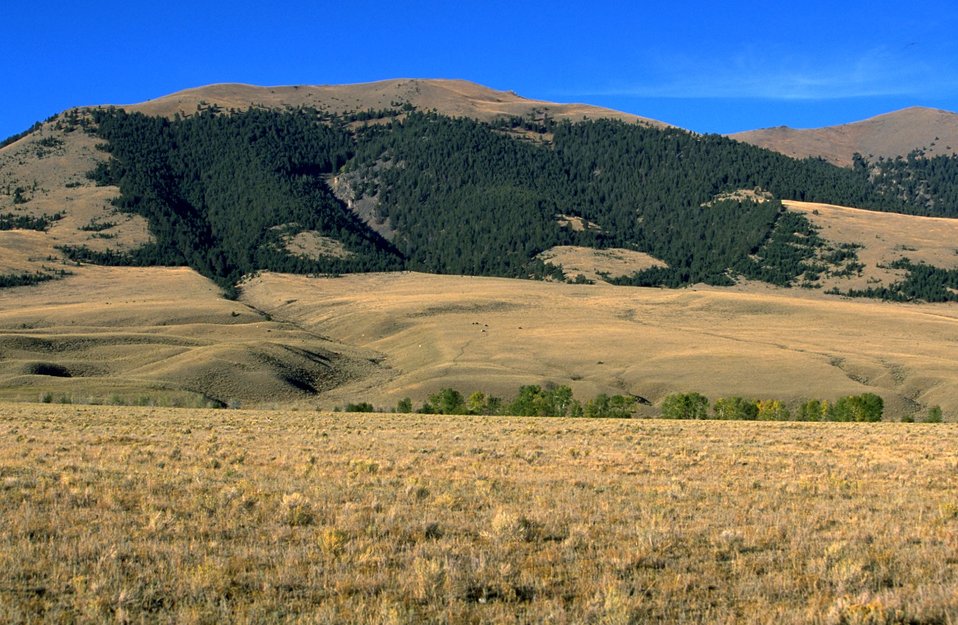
Grassy hill with Baldy in the background